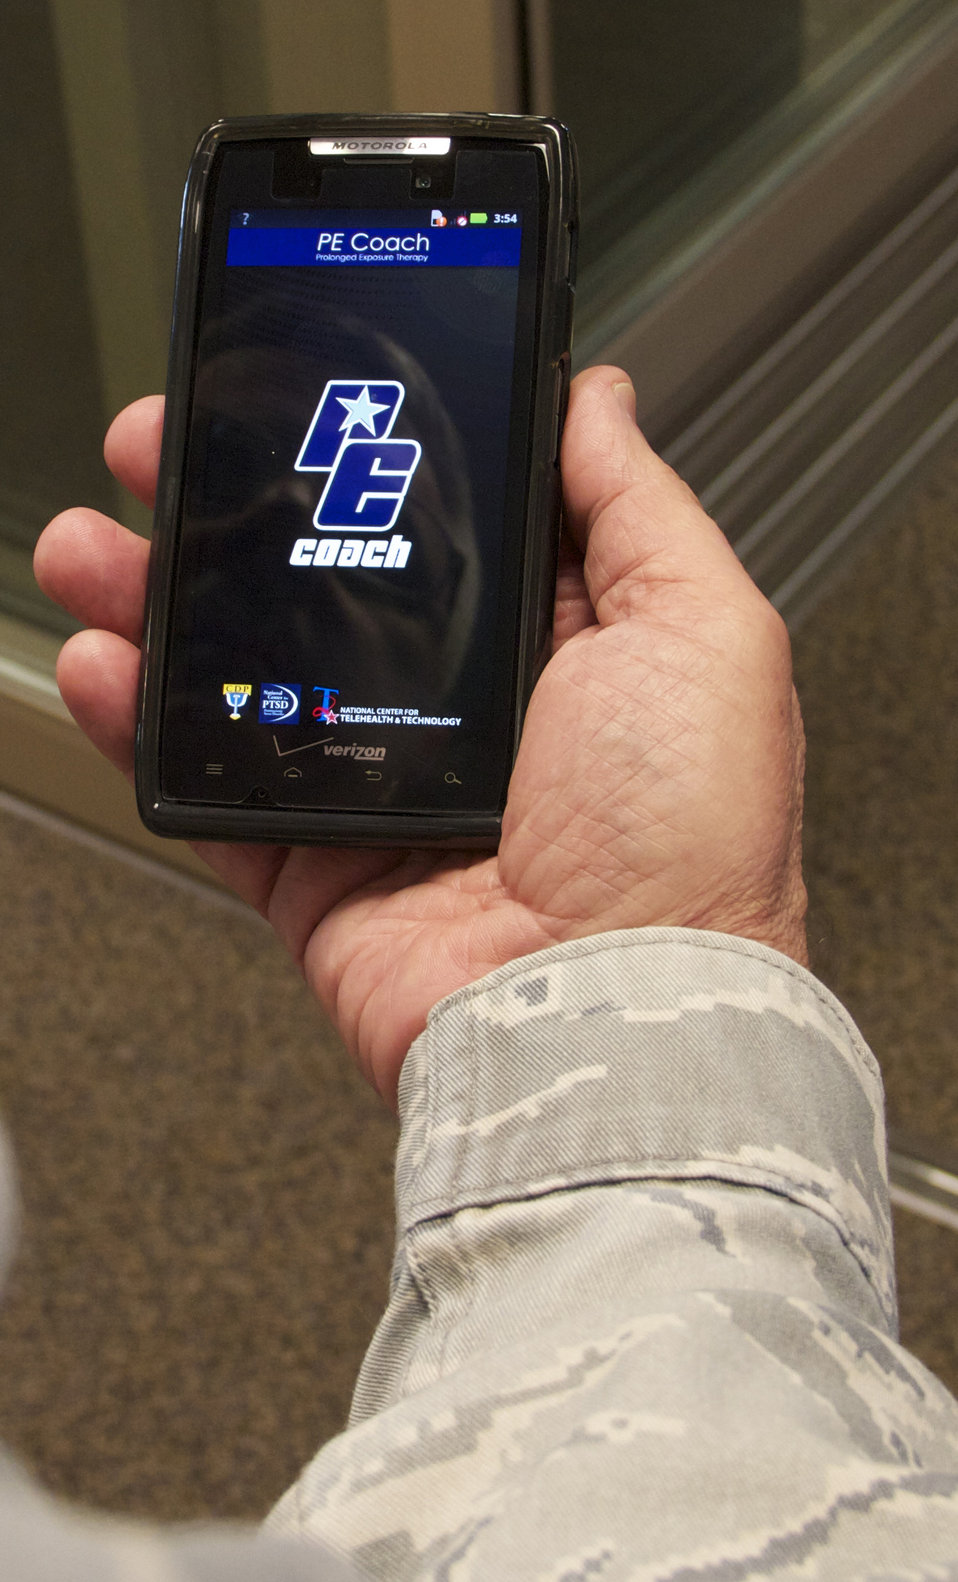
DOD, VA release mobile app targeting post-traumatic stress

The Defense and Veterans Affairs departments have released a free Apple and Android smartphone mobile application for use with post-traumatic stress disorder treatment. The app is called PE Coach; PE stands for